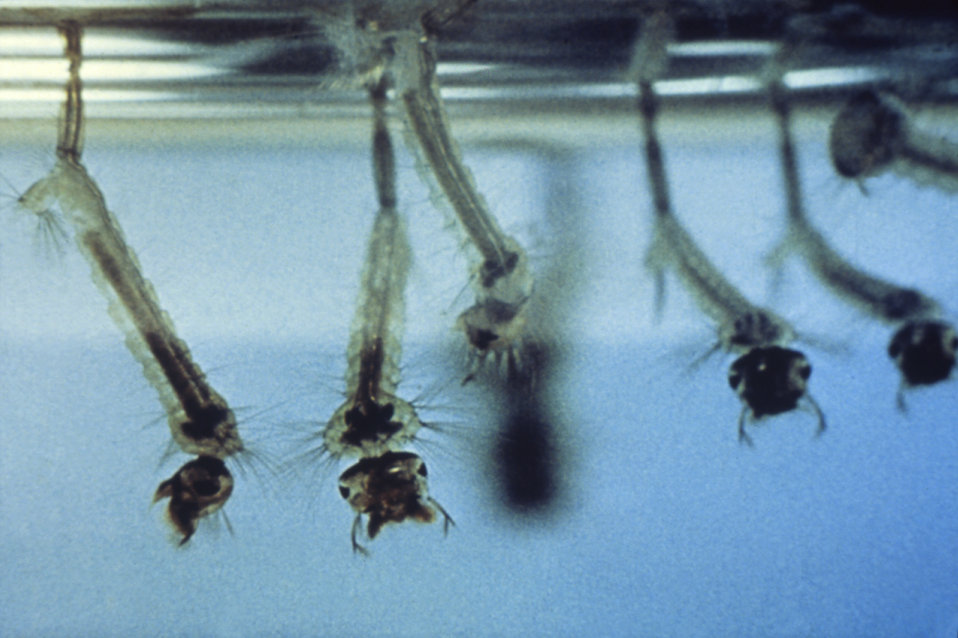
Mosquito larvae

This photograph of mosquito larvae was taken during a 1972 study of disease carriers and pests of migrant labor camps.